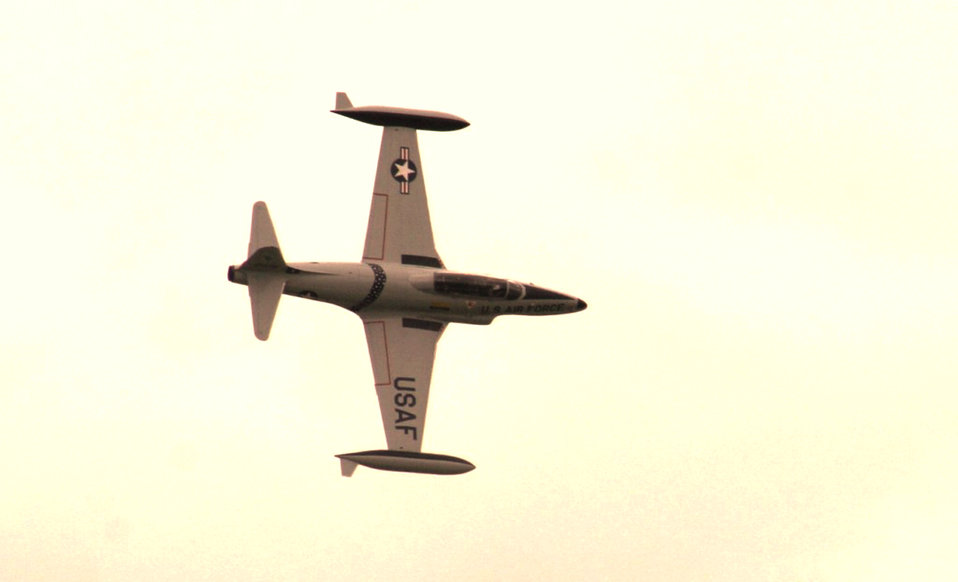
Scott AFB air show

A pilot guides a vintage T-33 Shooting Star during an aerial demonstration at the 2010 Airpower Over the Midwest Air Show Sept. 11, 2010, at Scott Air Force Base, Ill.